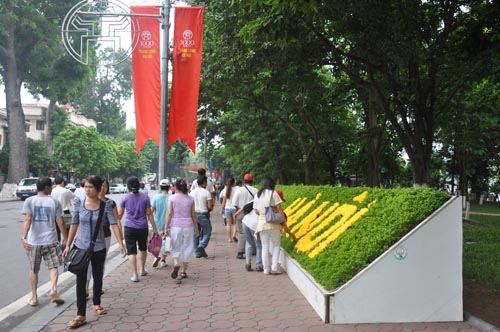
Hanoi celebrates 1,000 years as capital of Vietnam.